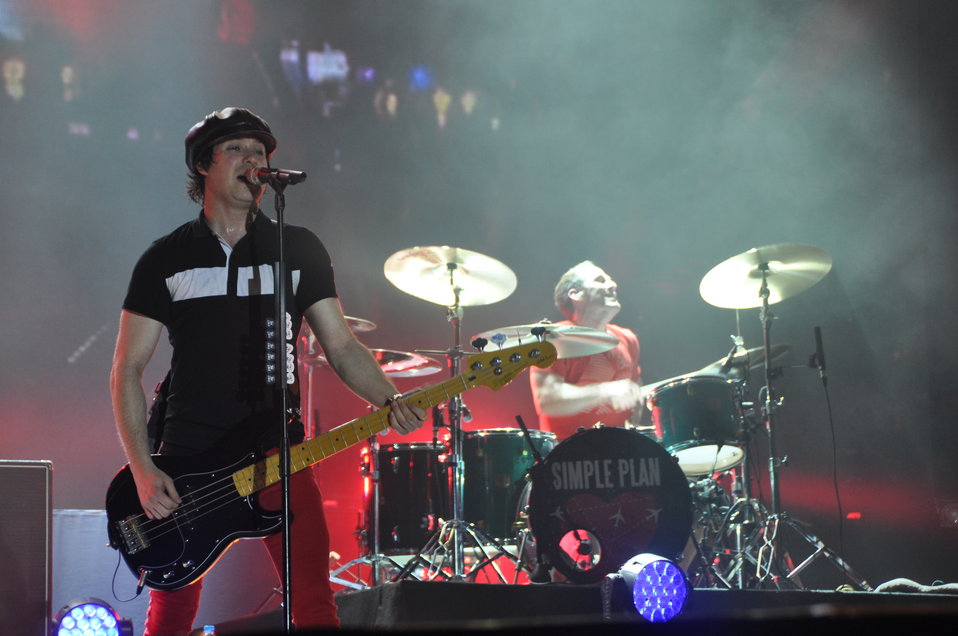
USAID co-sponors MTV EXIT concert in Hanoi against human trafficking

USAID co-sponsors MTV EXIT concert, campaign against human trafficking